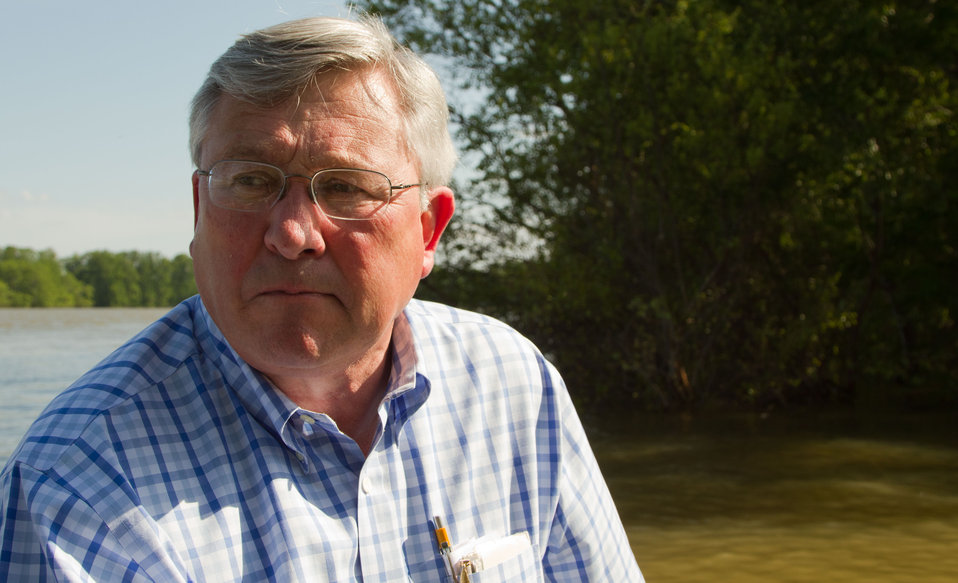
Lauderdale County Mayor Rod Schuh has to use a motorboat to survey the river flood and impact on the people and property of his county in Tennessee, on Saturday, May 21, 2011. The County is bordered on three sides by the Mississippi and two other rivers. Today’s task was to look at as many of the approximately 300 homes in the river basin as possible.